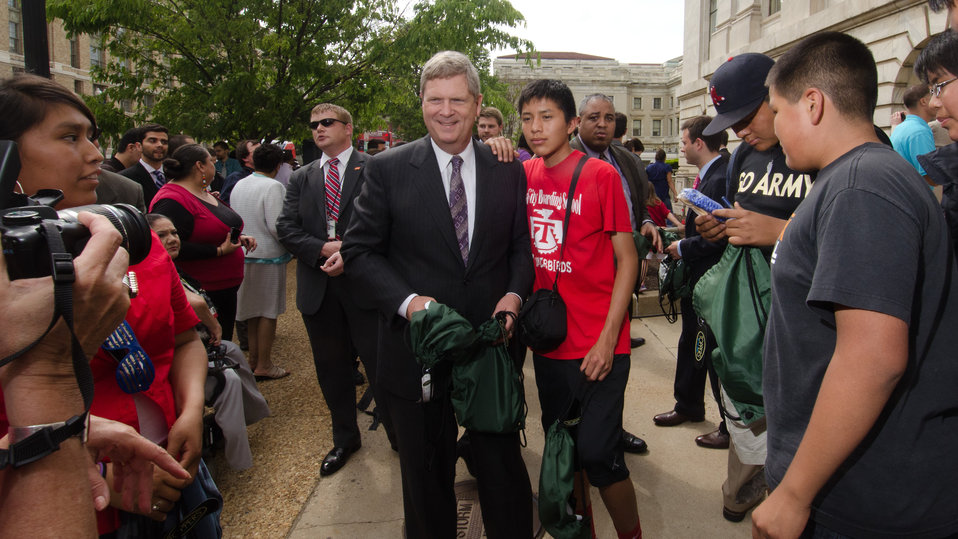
Agriculture Secretary Tom Vilsack met with Native American Youth at the U. S. Department of Agriculture in Washington, DC, on Wednesday, April 2, 2011 to encourage them to pursue a healthy lifestyle. After opening remarks and questions, Secretary Vilsack spent time with the 30 Students from Eastern and Western Tribes, Southeast Alaska, and Tuba City, Arizona, at he garden called The Roots of American Agriculture, and is part of the Headquarters’ People’s Garden.